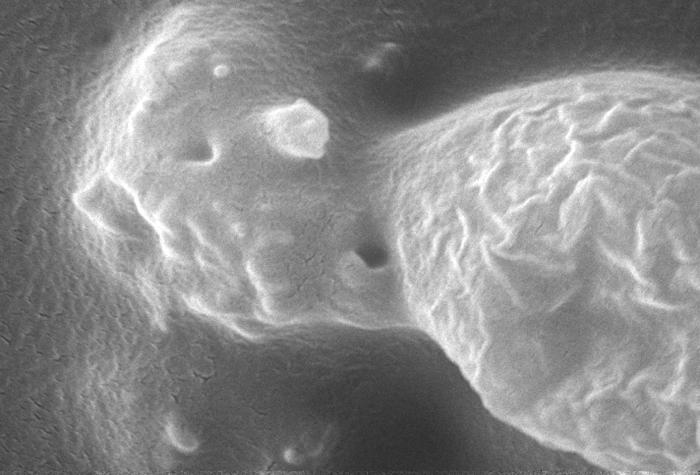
This scanning electron micrograph (SEM) revealed some of the ultrastructural features seen on the surface of an Acanthamoeba polyphaga protozoan. Note the amorphous nature of the organism's exterior from which pseudopodia, from the Latin pseudo = false, and podia = feet, can extend. These pseudopodia enable the amoeba to move about, and grasp objects in its environment.